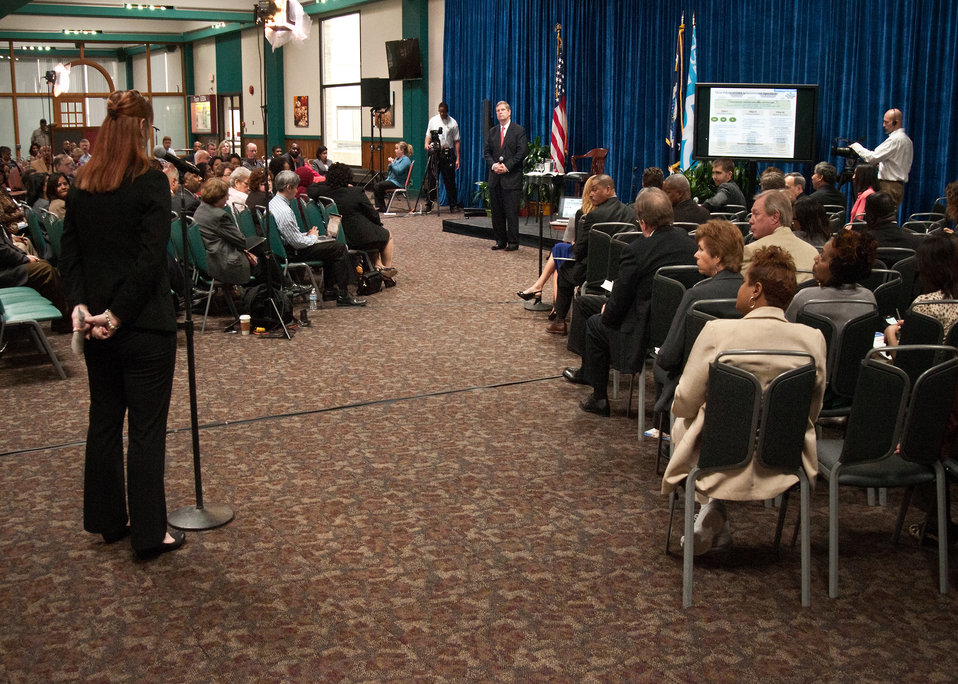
Agriculture Secretary Tom Vilsack listens to questions posed by employees during the Ask The Secretary event held in the South Building Cafeteria, in Washington, D.C., on Wednesday, March 21, 2012, gave the opportunity for USDA employees the ask questions about the Blueprint for Stronger Service Initiative and hear directly from Secretary Vilsack. This forum encouraged USDA employees to offer their ideas, voice their concerns, and gather more information on the discussions that are taking place within the USDA Administrative Solutions Project. The Blueprint for Stronger Service Initiative aims to build a modern and efficient service organization that is closely timed with technological innovations - and better suited to respond to 21st century agricultural challenges.